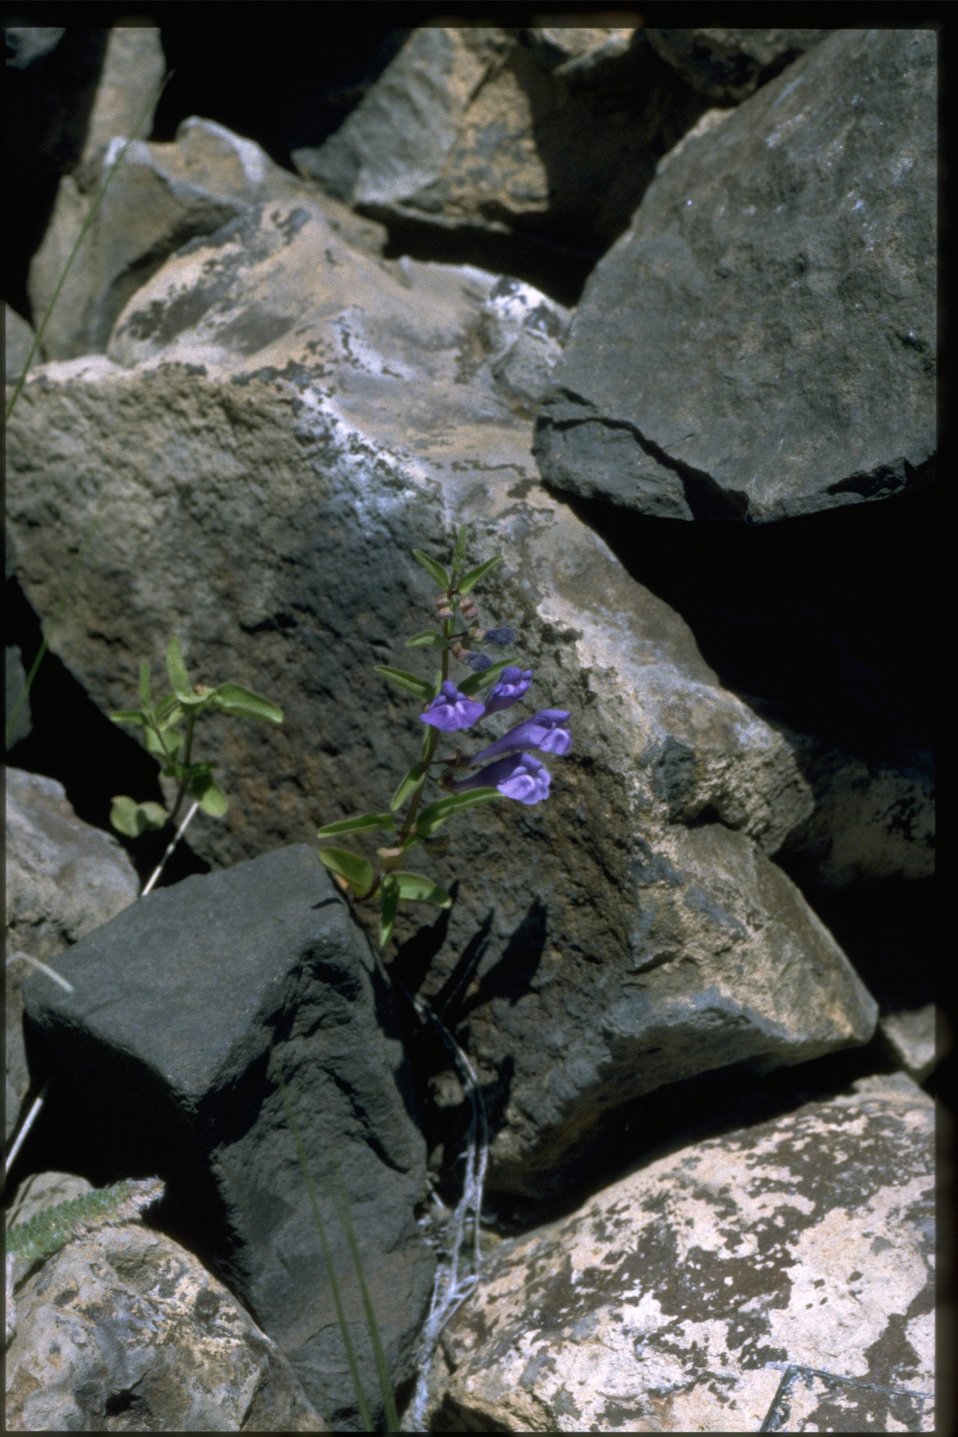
Narrowleaf skullcap (Scutellaria angustifolia) growing in basalt outcrop.